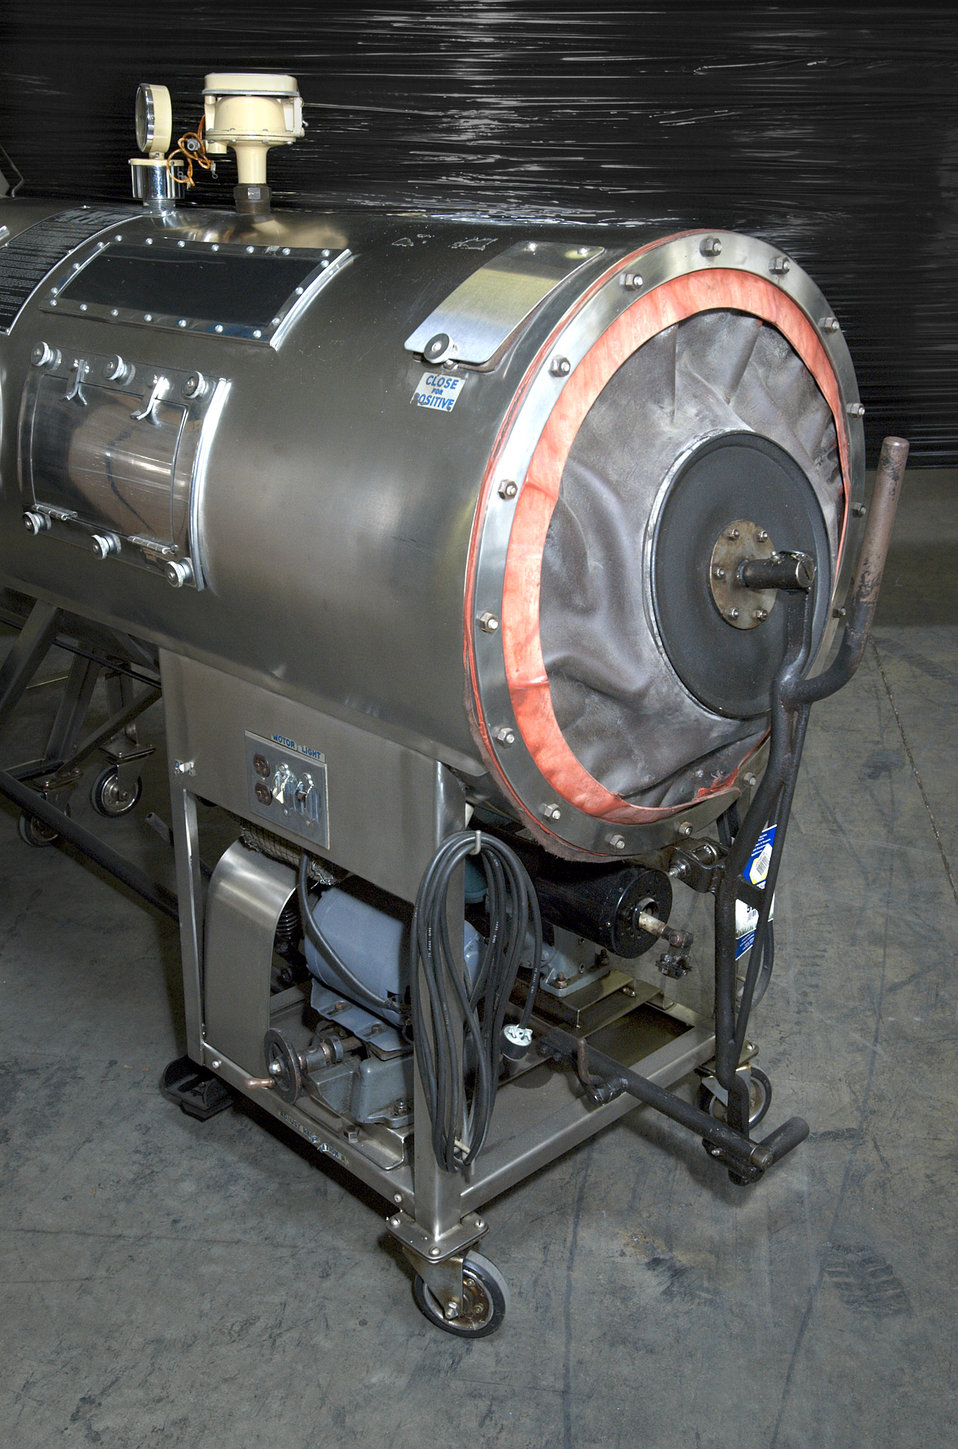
Photographed from the rear, this Emerson respirator, also known as an 'iron lung', was used by polio patients whose ability to breath was paralyzed due to this crippling viral disease.